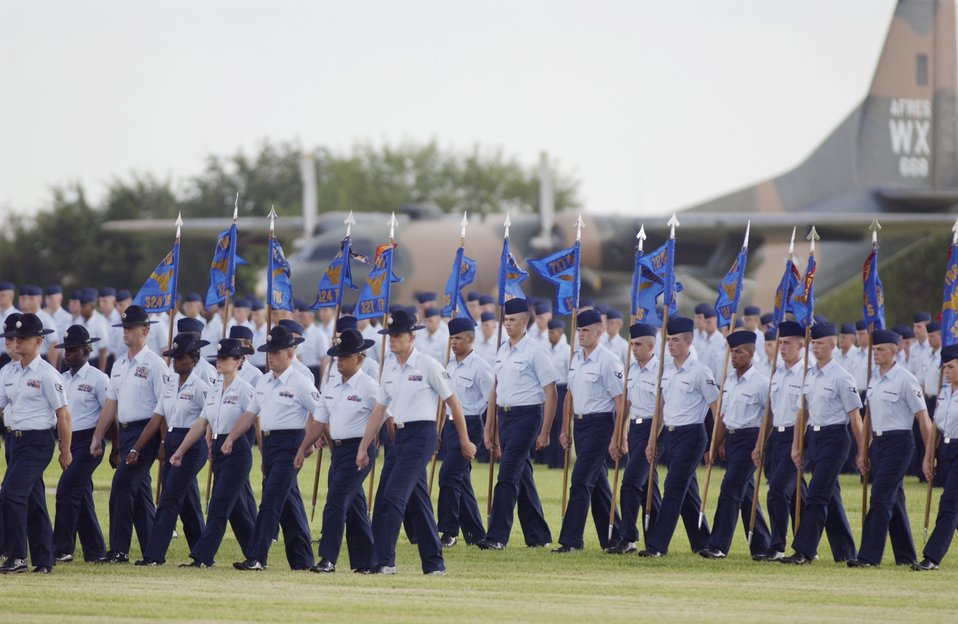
Tomorrow's leaders

LACKLAND AIR FORCE BASE, Texas -- Airmen participate in a rite of passage shared by all enlisted Airmen -- the Basic Military Training graduation parade. The parade of 15 squadrons marked the end of the six-week training period for about 750 of the Air Force's newest Airmen.